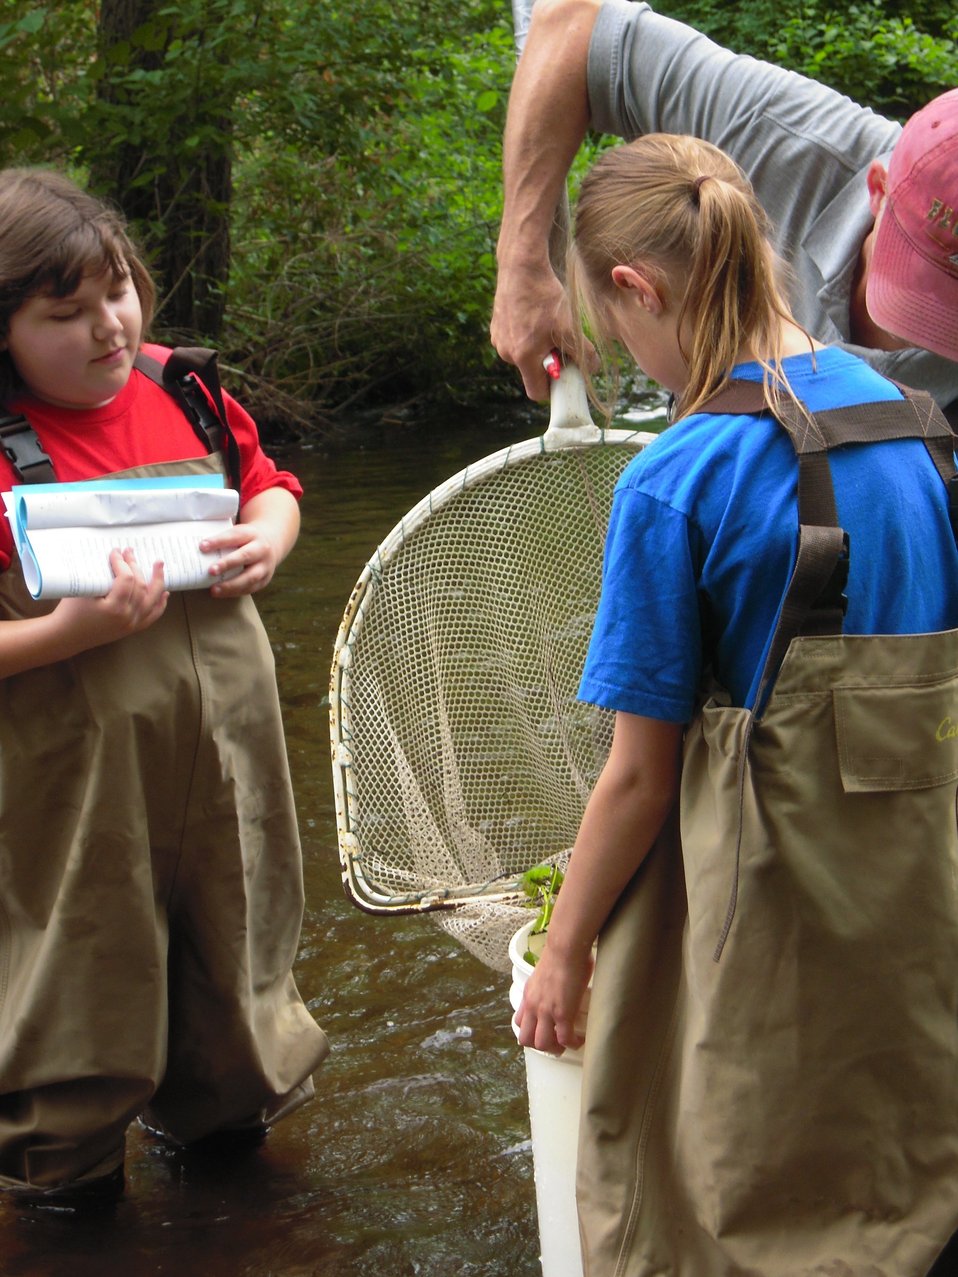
Checking nets for species